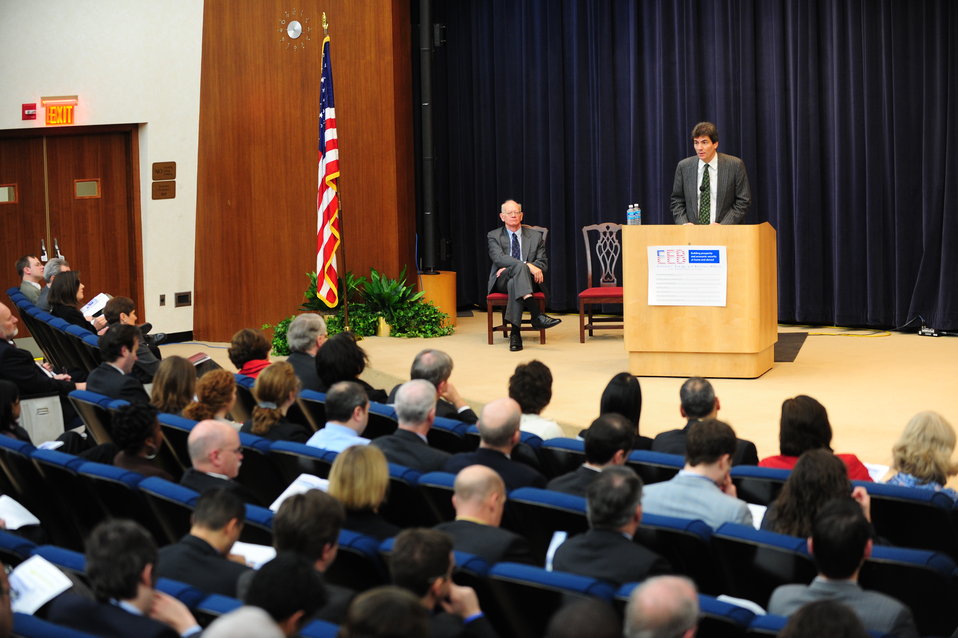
DSC Assistant Secretary Fernandez Delivers Remarks at the Economic Leadership Day Ceremony

Assistant Secretary of State for Energy, Economic and Business Affairs Jose Fernandez delivers remarks at the Economic Leadership Day Ceremony, at the U.S. Department of State in Washington, D.C., on March 29, 2011. Ambassador Ronald Neumann is seated on stage.